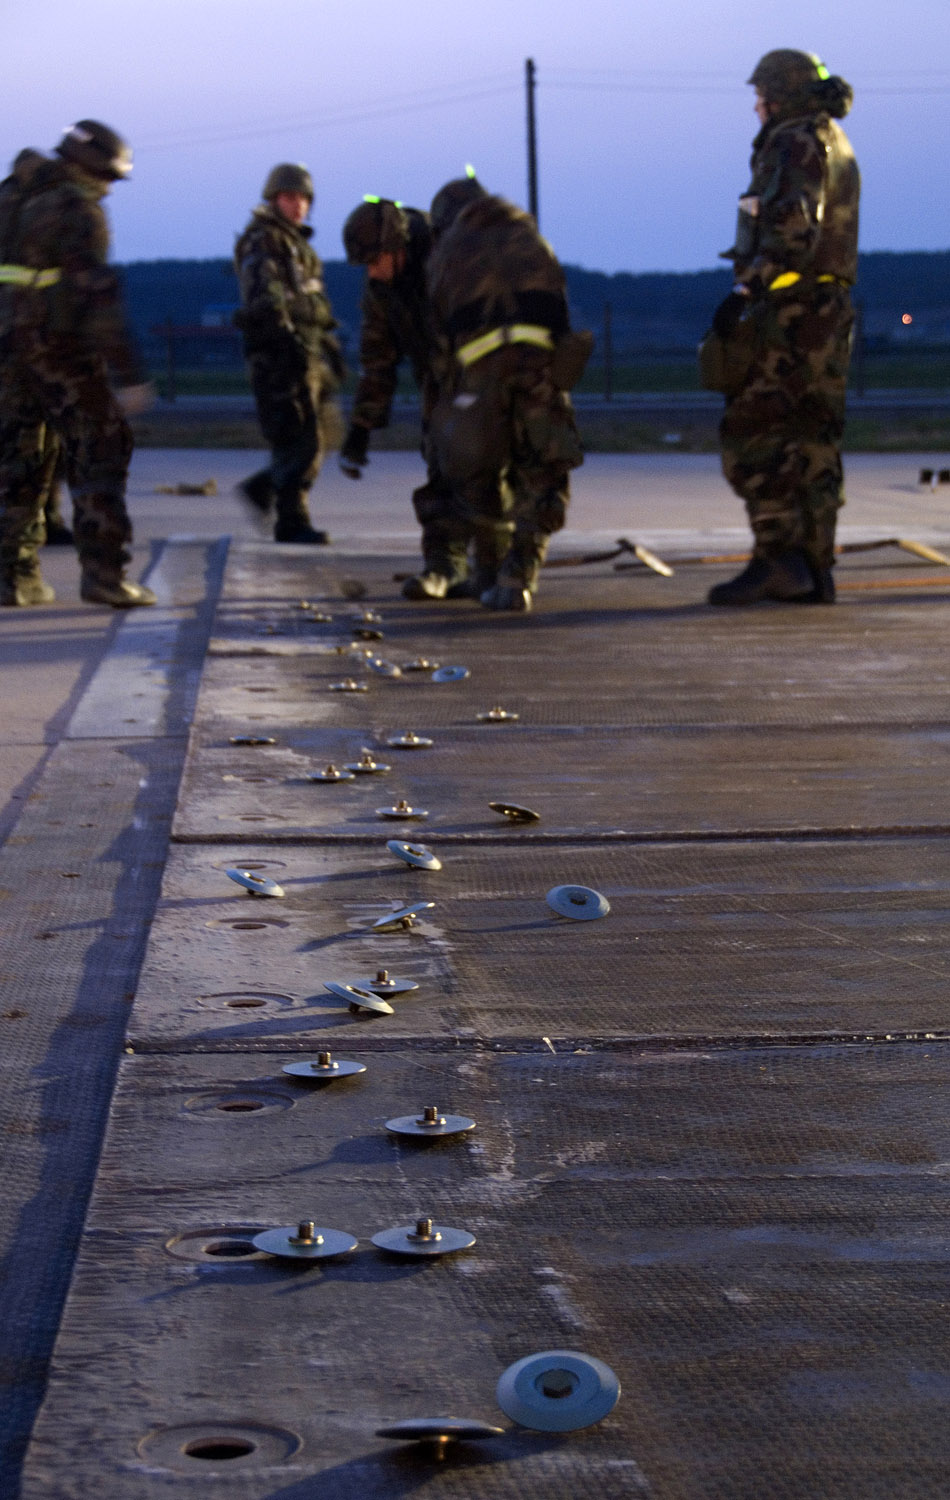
Repair team keeps Kunsan mission going

Members of the 8th Civil Engineer Squadron Airfield Damage Repair team install bushings in fiberglass matting April 19 at Kunsan Air Base, South Korea. The ADR teams perform several functions during exercises, including crater repair after simulated attacks and airfield lighting during simulated power outages, making it possible to get aircraft back in the air quickly. Kunsan AB is currently undergoing an Operational Readiness Inspection to test the 8th Fighter Wing's ability to conduct its wartime mission.